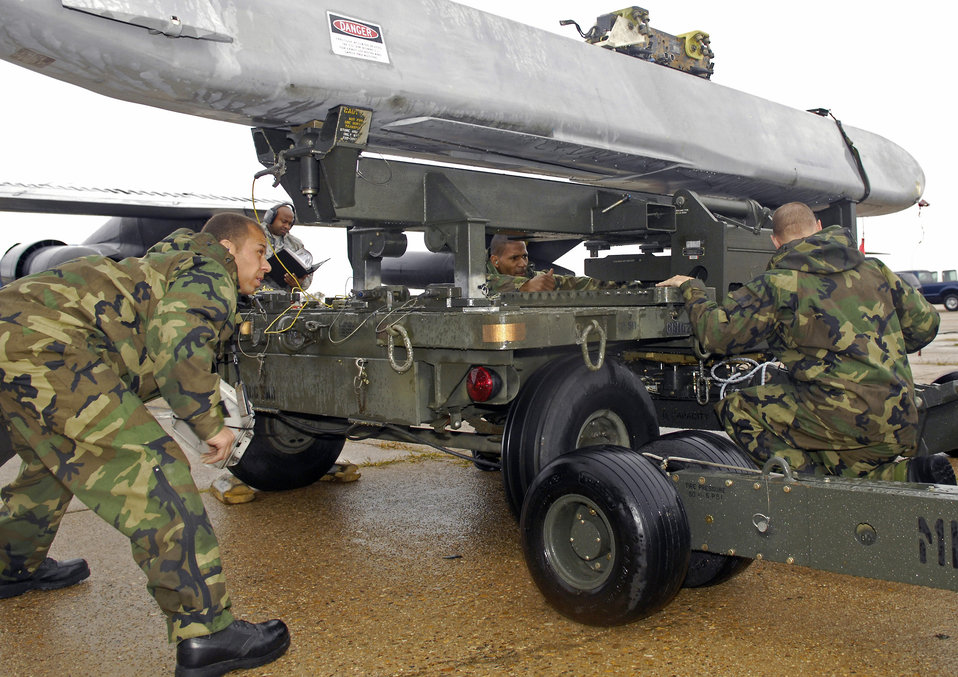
Barksdale officials complete Nuclear Surety Inspection

A 2nd Maintenance Squadron weapons load team is evaluated during a portion of the Air Combat Command Nuclear Surety Inspection here Nov. 12 at Barksdale Air Force Base, La. ACC Inspector General officials graded the base's nuclear surety program management and administration, the personnel reliability program and logistics movement.